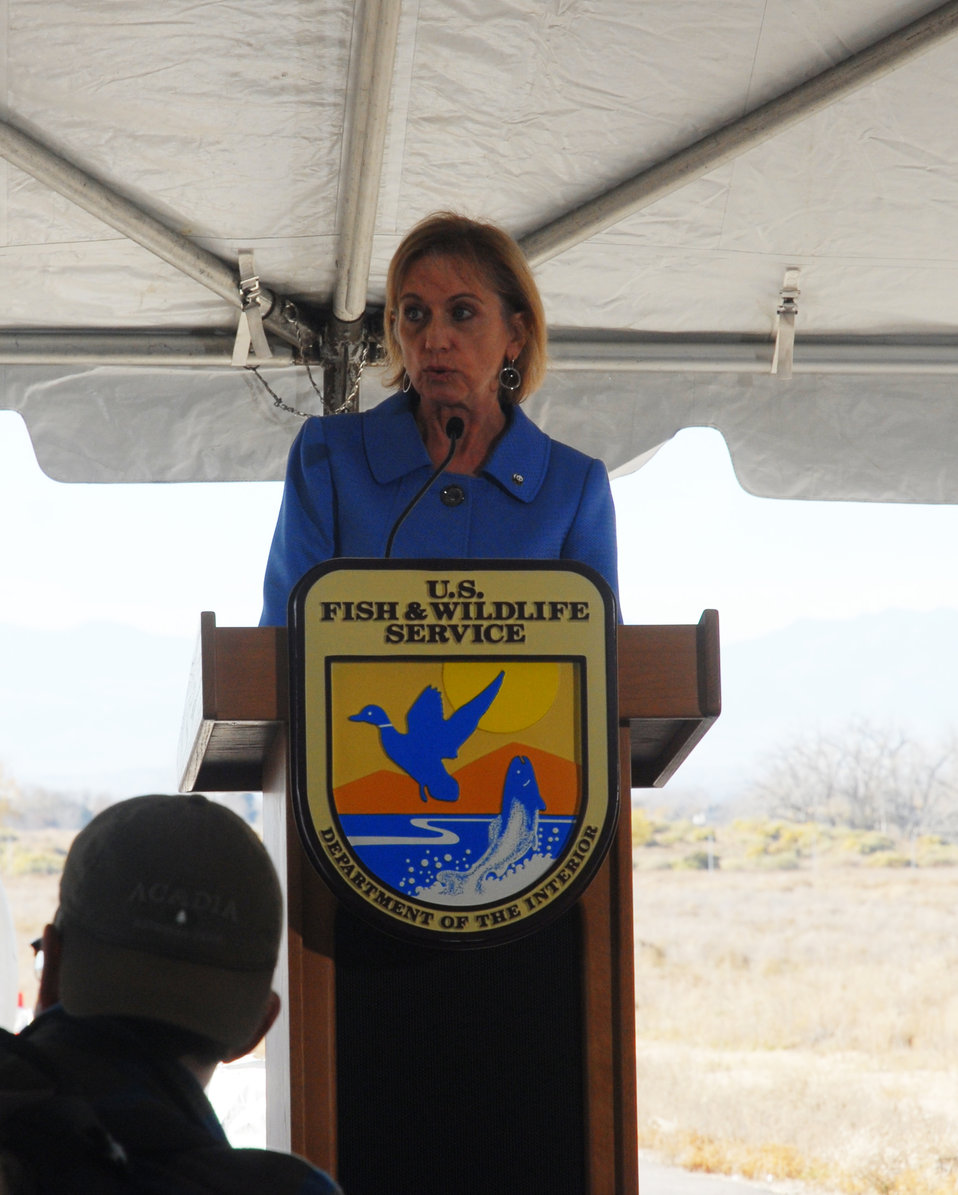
Ginette Hemley, Senior Vice President for Conservation Strategy and Science at the World Wlidlife Fund, speaks at the U.S. Ivory Crush.